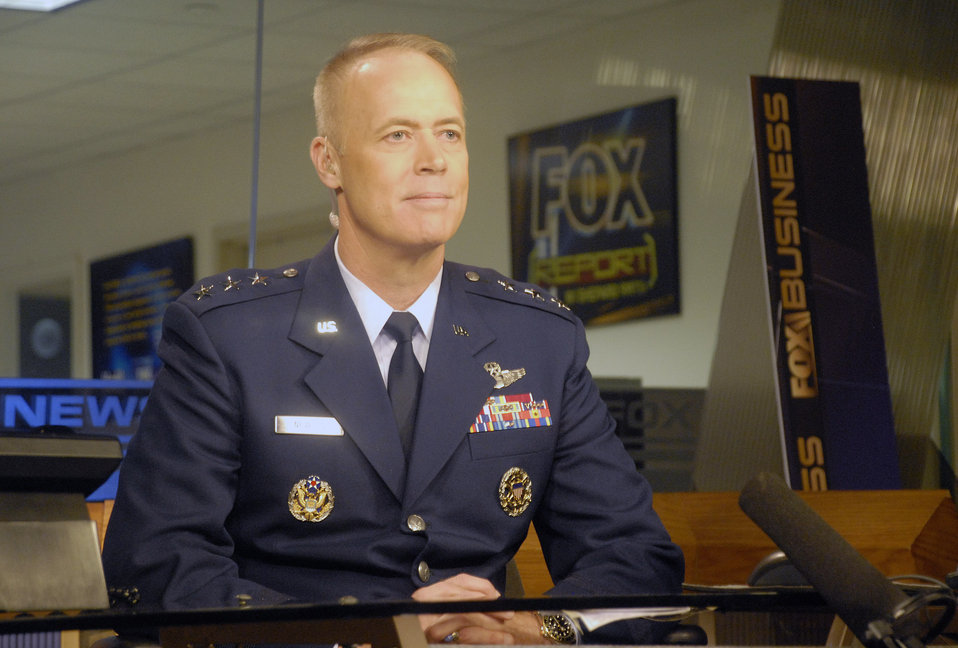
General, NCO talk about warrior care on national TV

Lt. Gen. Richard Y. Newton III talks about